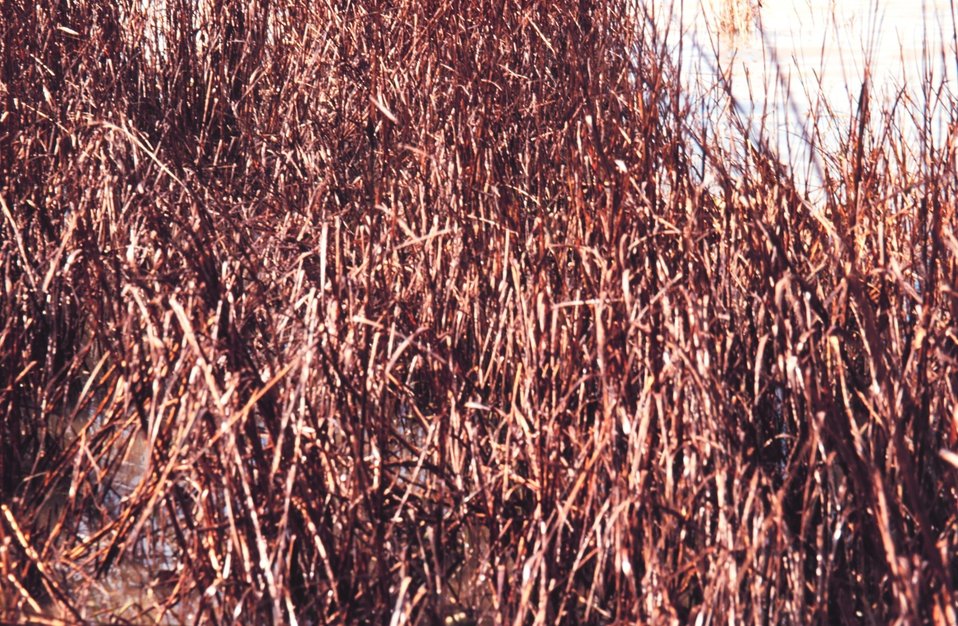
Oiled Spartina - a cordgrass common in coastal marshes